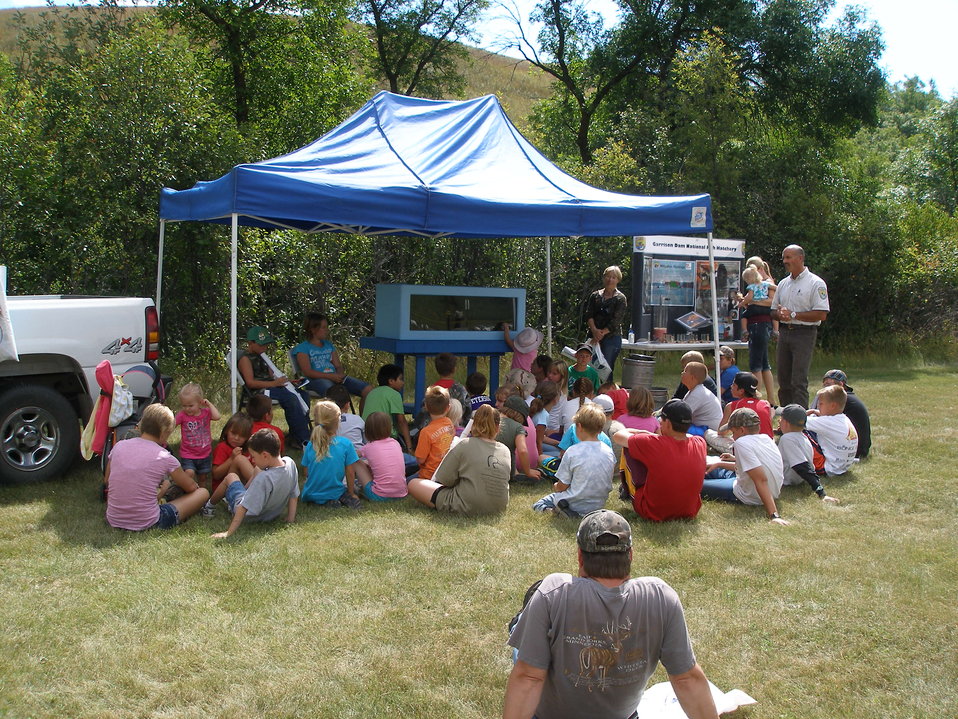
2011 Greenwing Day - Garrison Dam National Fish Hatchery session

Des Lacs National Wildlife Refuge, Tasker's Coulee

Rob Holm of the Garrison Dam National Fish Hatchery talked to participants about waterway conservation in the Missouri River System.